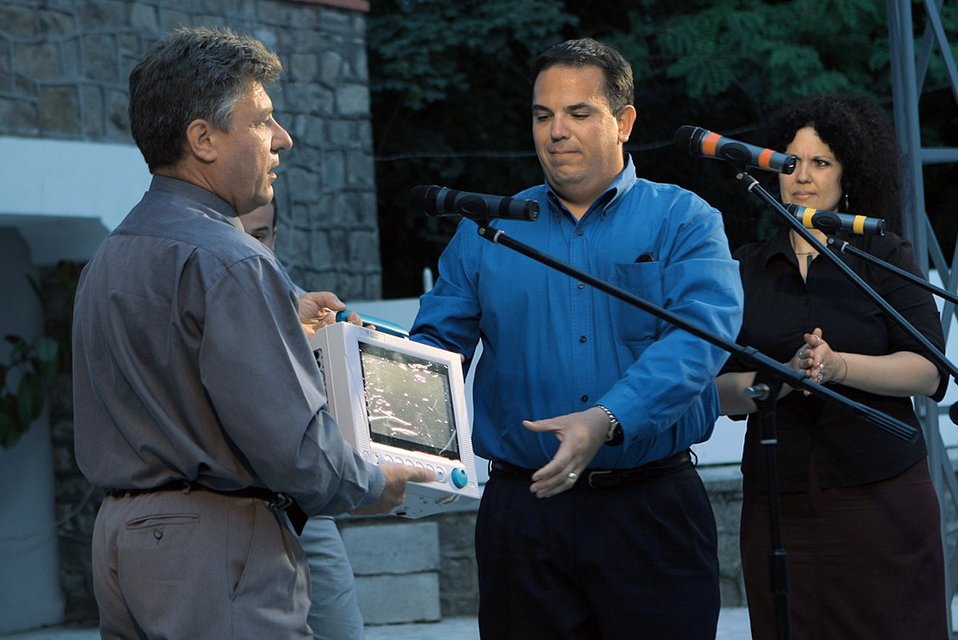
Airmen donate medical equipment to Bulgarian hospital

Chaplain (Maj.) Vincent Cummings presents a new pulse oximeter to Dr. Stefan Lazarov from the Medical University June 23 in Plovdiv, Bulgaria. Approximately 200 Airmen Homestead Air Reserve Base, Fla., deployed to train with the Bulgarian air force. The Airmen raised $2,800 to purchase a medical device for the children's ward that is useful for patients with respiratory or cardiac problems. Chaplain Cummings is a 482nd Fighter Wing chaplain.